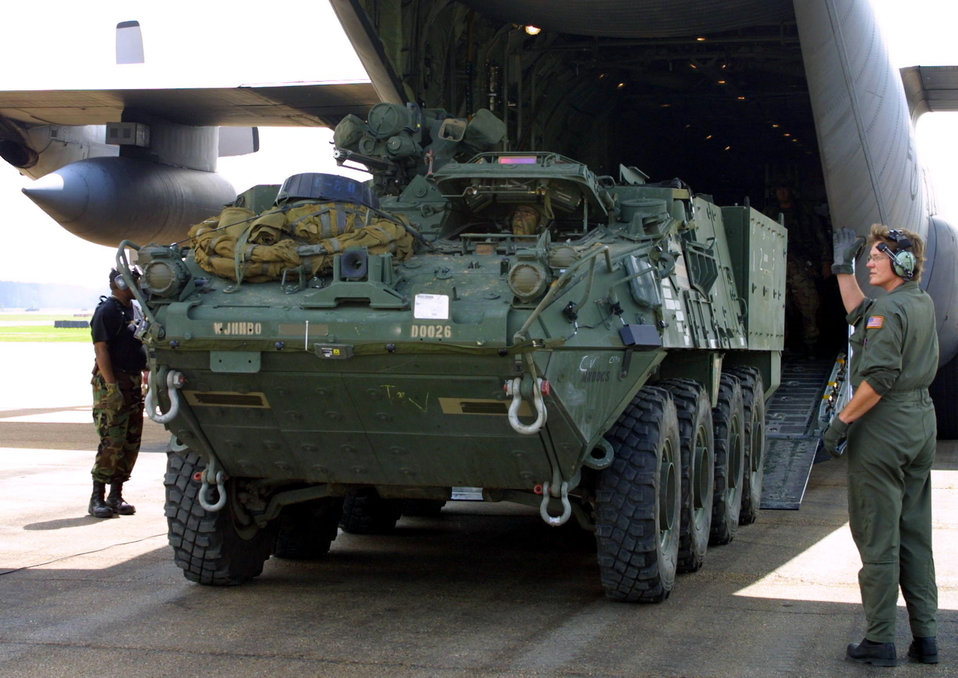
Catchin' a lift

ALEXANDRIA, La. -- A mortar carrier Stryker vehicle makes its way off a California Air National Guard C-130 Hercules at Esler Air Field, La. The C-130s, which carry single Strykers, delivered 21 Strykers and 175 soldiers to the air field from a forward landing strip at Fort Polk, La.